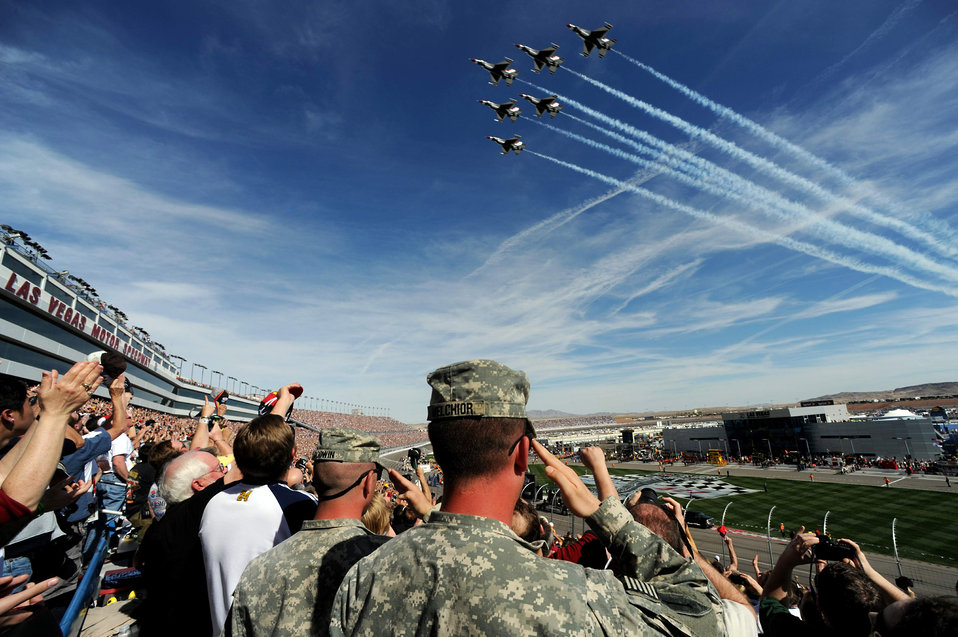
Air Force teams with NASCAR to aid recruiting

The U.S. Air Force Air Demonstration Squadron